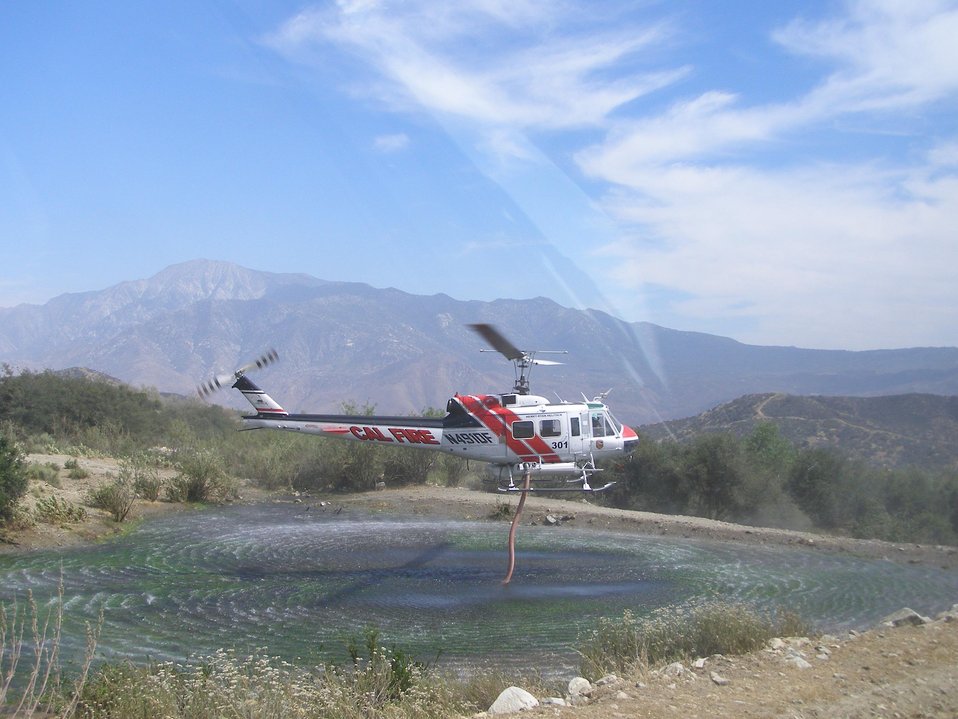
A helicopter fills up with water for use on the Hathaway Fire. The Hathaway Fire is east of Hathaway Canyon on the northern portion of the Morongo Indian Reservation in the San Gorgonio Wilderness near Palm Springs, CA began on started Jun. 9, 2013 and the cause is still to be determined. The fire has burned approximately 3, 825 acres and is 95% contained as of Jun. 25, 2013.